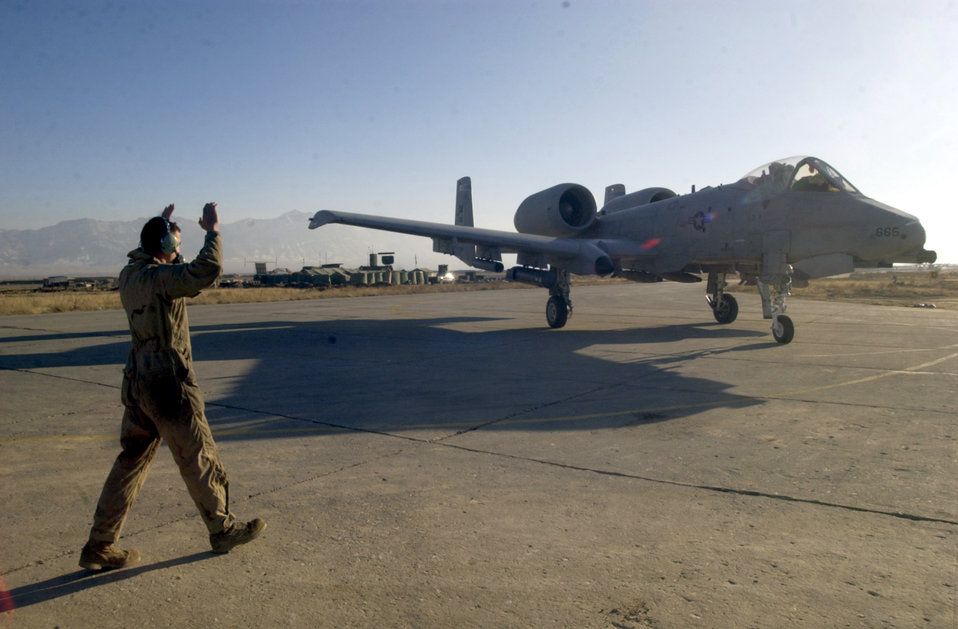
Christmas Eve launch

BAGRAM AIR BASE, Afghanistan -- Airman 1st Class Jeremiah Hansen marshals an A-10 Thunderbolt II for a Christmas Eve launch here. Hansen and other 354th Expeditionary Fighter Squadron airmen are deployed from Davis-Monthan Air Force Base, Ariz. They are supporting Operation Enduring Freedom. Hansen is a crew chief with the squadron.